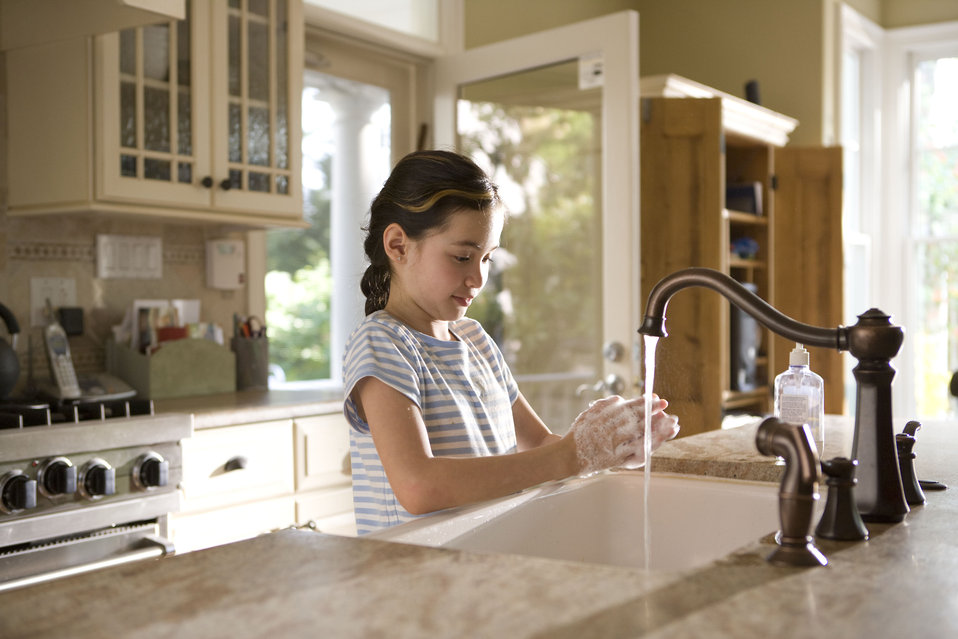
This young girl was shown in the process of properly washing her hands at her kitchen sink, briskly rubbing her soapy hands together under fresh running tap water, in order to remove germs, and contaminants, thereby, reducing the spread of pathogens, and her ingestion of environmental chemicals or toxins. Children are taught to recite the Happy Birthday song, during hand washing, allotting enough time to completely clean their hands.